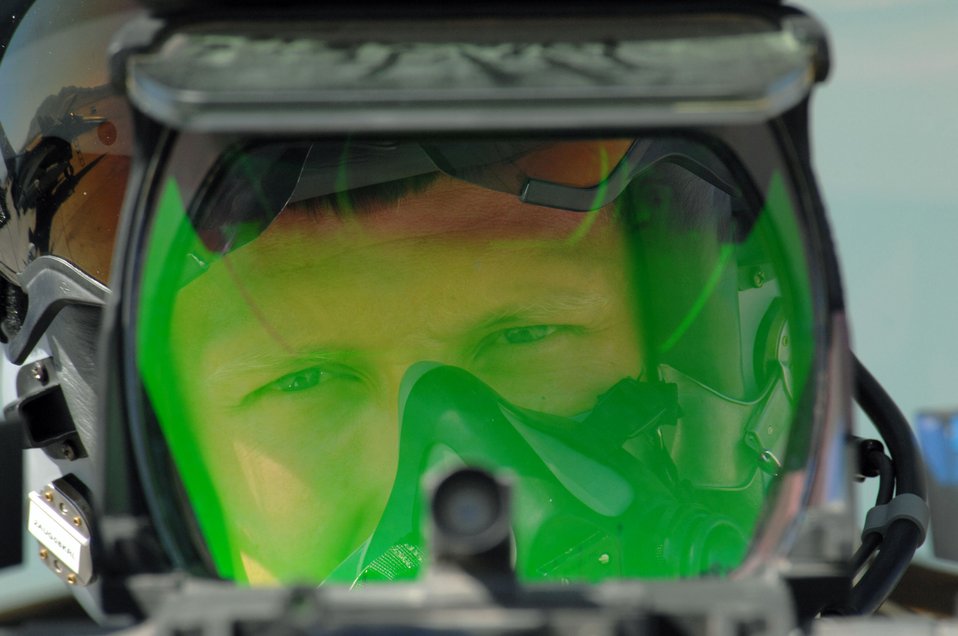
Checking the instruments

Capt. Chris Stepanek checks his instruments before a training mission during Red Flag July 22 at Nellis Air Force Base, Nev. Capt. Stepanek is an F-16 Fighting Falcon pilot at Hill AFB, Utah.